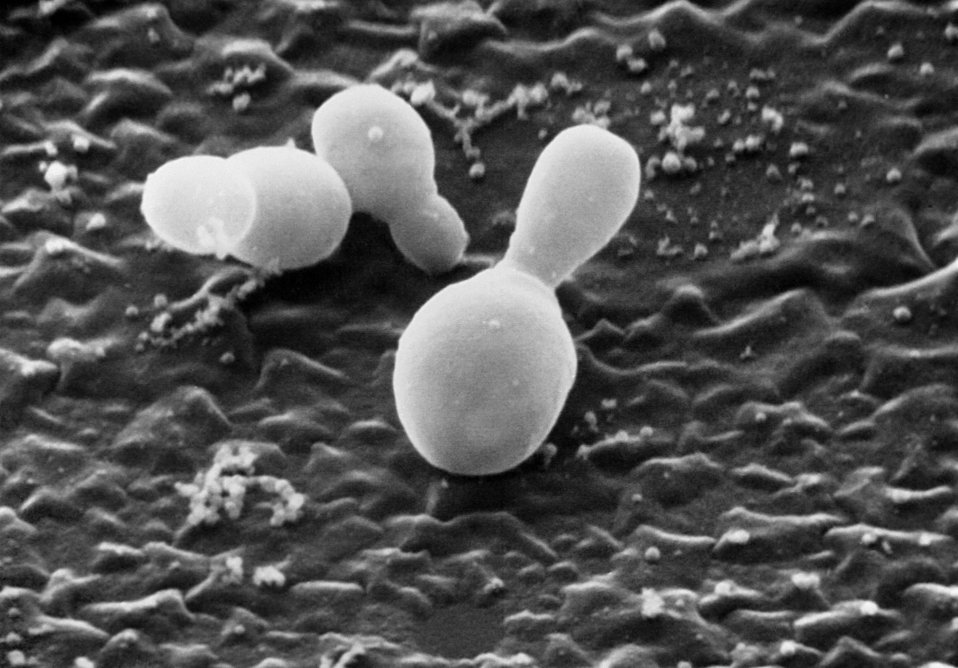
Scanning electron micrograph (SEM) of Malassezia furfur.